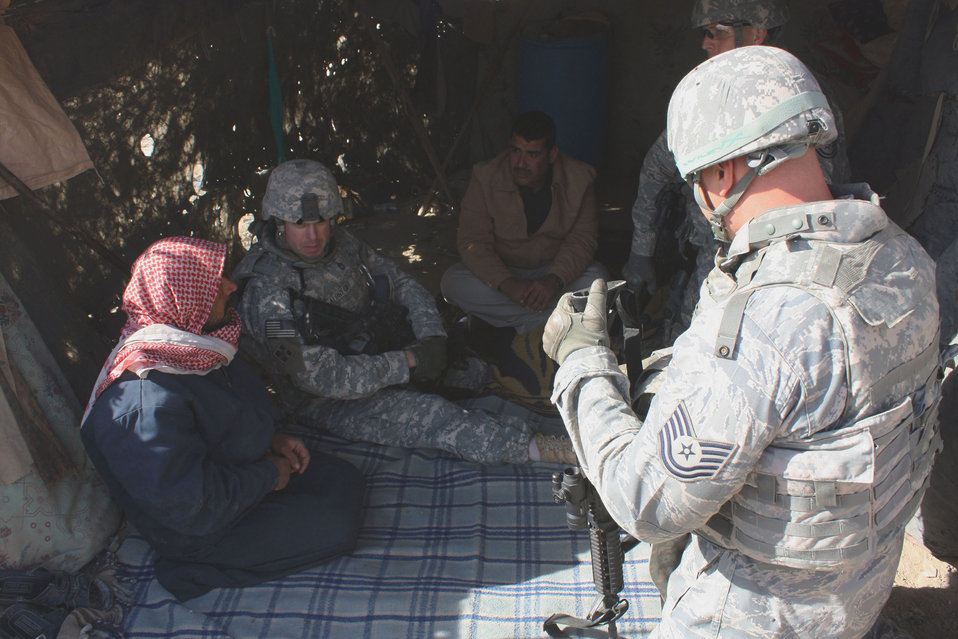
Airman joins Soldiers in aiding camps in Iraq

Tech. Sgt. Joseph Slysz and Army Sgt. 1st Class Kevin Albrecht talk with an Iraqi man at his home Dec. 16, 2008, outside Contingency Operating Base Adder near the city of Nasiriyah, Iraq. Sergeant Slysz is the NCO in charge of criminal intelligence for the 732nd Provost Marshal Office Det. 5. He is deployed from Edwards Air Force Base, Calif. Sergeant Albrecht is assigned to the 4th Special Troops Battalion, 4th Brigade Combat Team, 1st Cavalry Division.